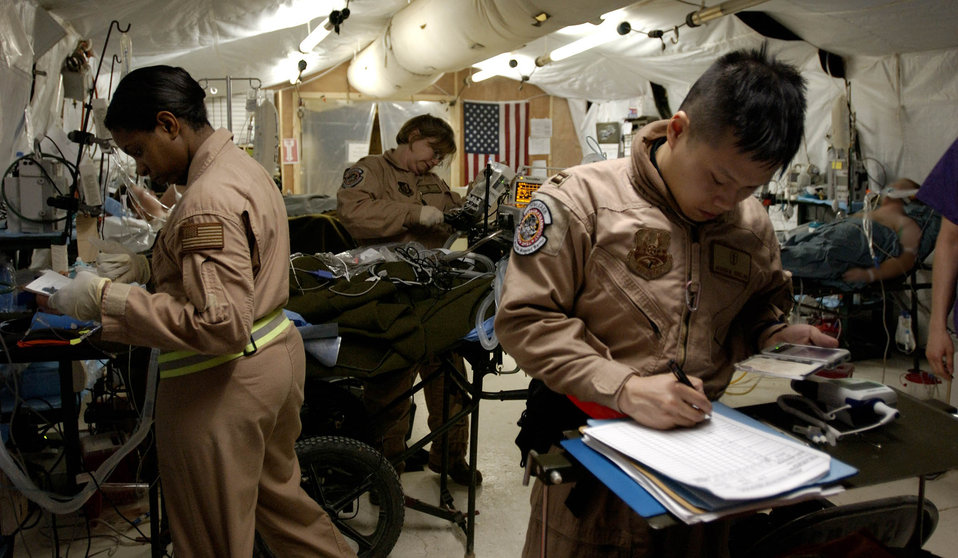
Intensive care in the air

BALAD AIR BASE, Iraq -- Capt. (Dr.) Warren Thio (right) transcribes a critically injured patient's records and medicines as Tech. Sgt. Tammy Shy (left) and Maj. Kathleen Browning prepare machines to monitor the status and administer medication for a patient at the Air Force Theater Hospital intensive care unit here. They are part of a critical-care air-transport team from Ramstein Air Base, Germany. The team prepared the patient for a flight to Germany under their constant medical supervision. They are deployed from the 374th Medical Squadron at Yokota AB, Japan.